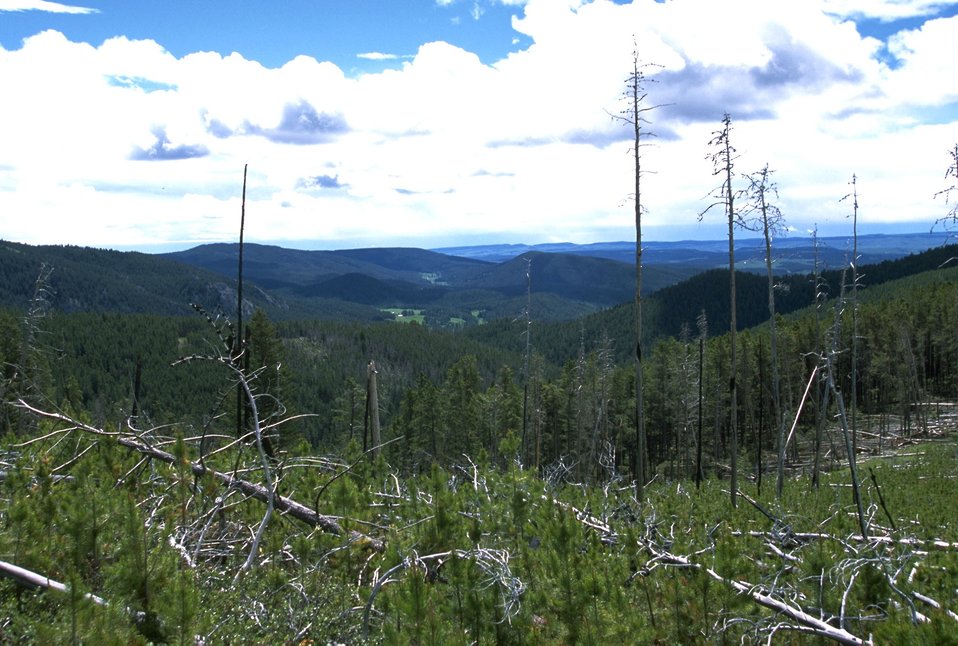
View of a valley and downed trees in the Judith Mountains